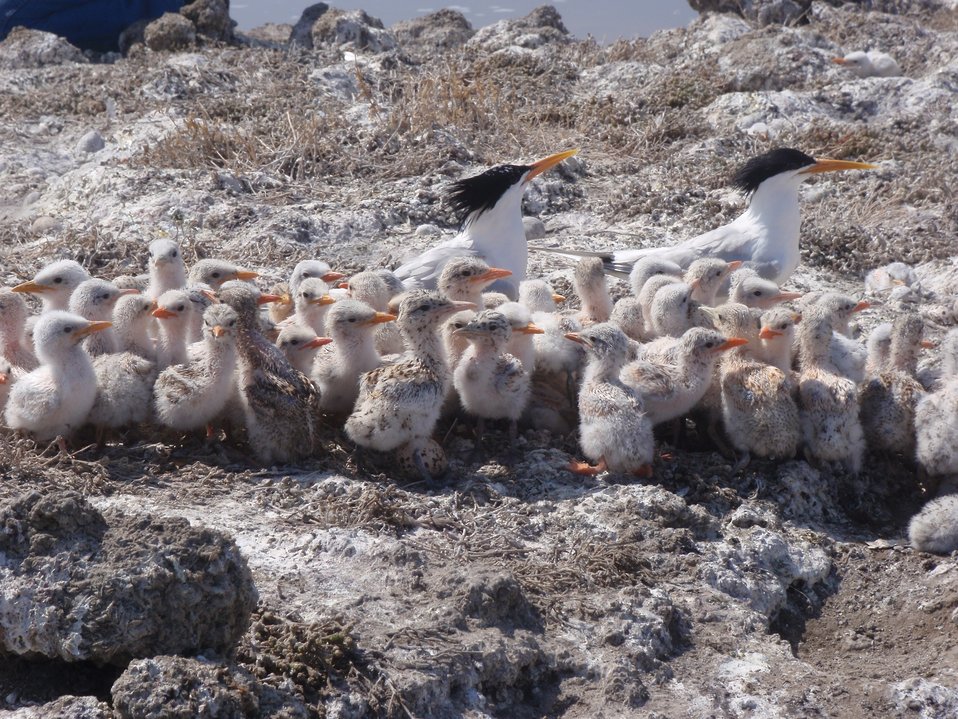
Elegant tern chicks huddle with parents

Elegant terns gather together and get fed by several adults. There is strength and protection when they stay together as a group